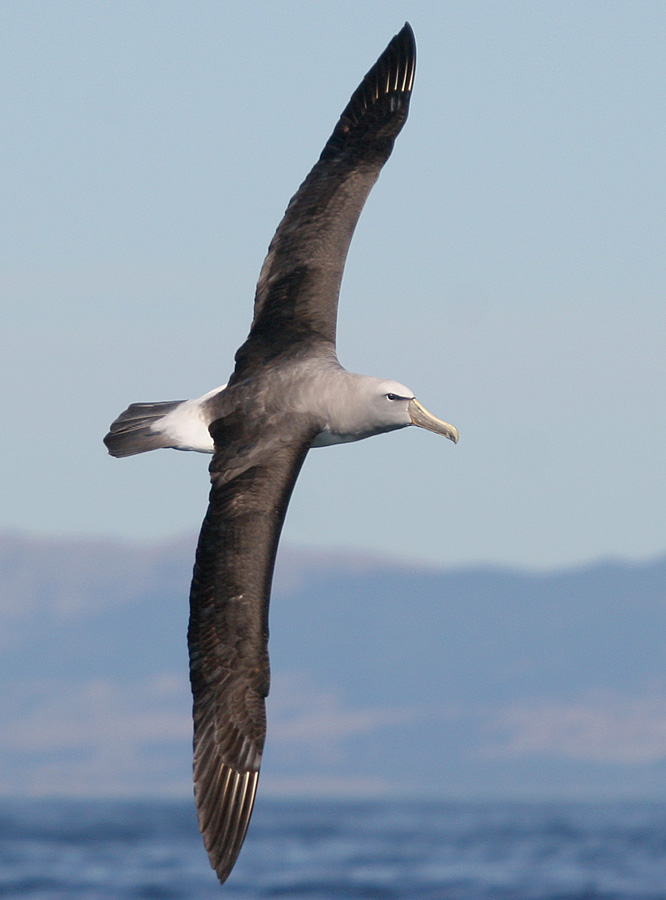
Author: Mark Jobling